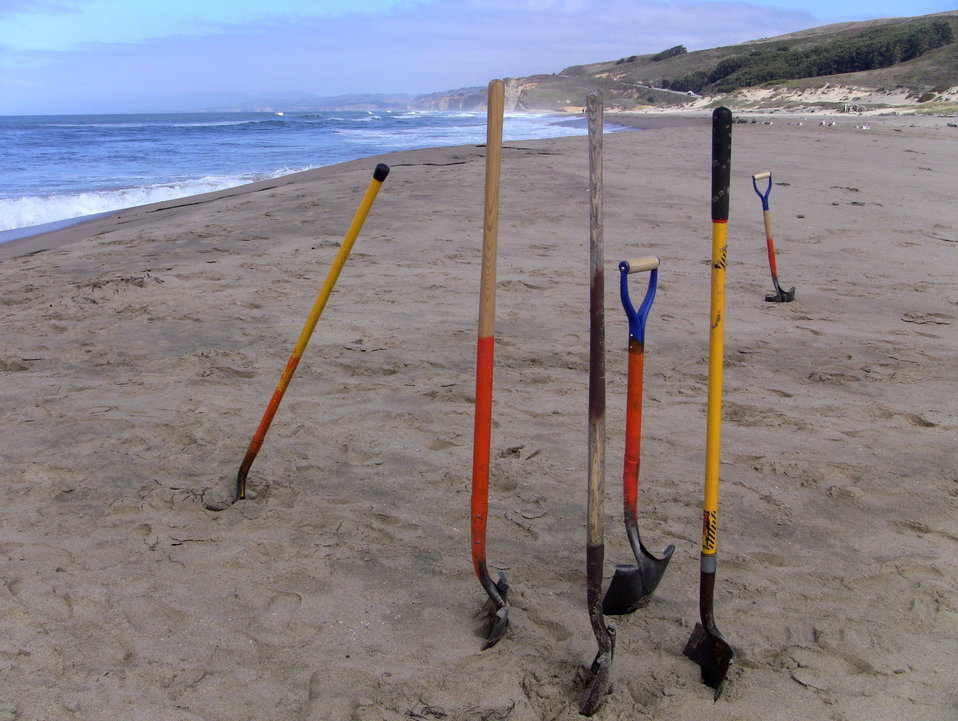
Pescadero Breach 19